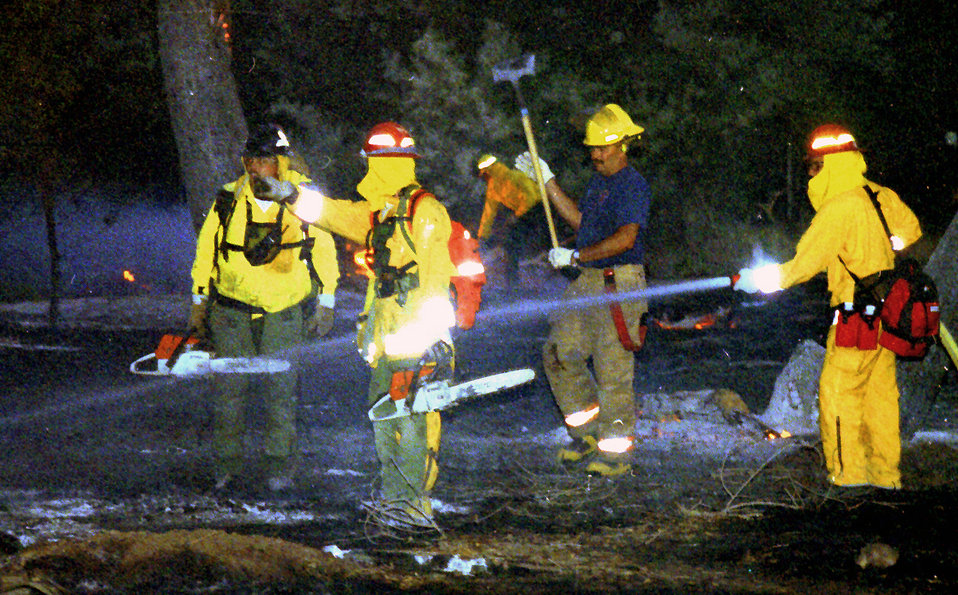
Busy night

ALBUQUERQUE, N.M. -- Members of Kirtland Air Force Base's fire department extinguish hot spots in the Albuquerque Bosque along the Rio Grande on June 24. Base officials sent more than 30 firefighters and five vehicles to help as part of a mutual-aid agreement. In two days, nearly 1,500 acres burned and approximately 1,000 people were evacuated from their homes and businesses.